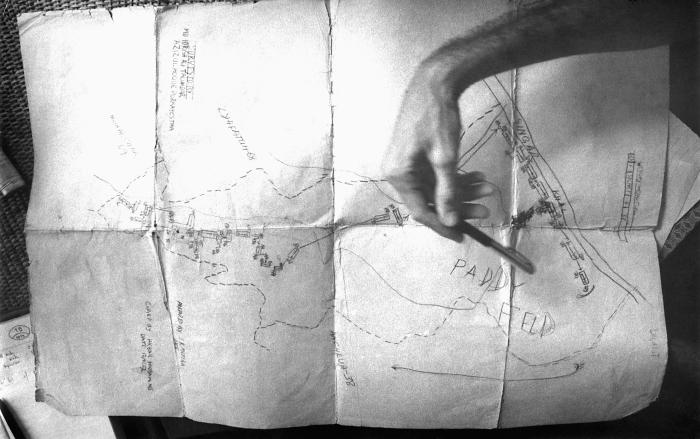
Maps were integral to achieving a successful smallpox eradication campaign outcome, for it enabled public health practitioners, and local volunteers to track smallpox cases once discovered, and inhabitants who'd been in contact with such cases using epidemiologically sound science. There were different types of maps that arose during the process, and this was a 'field map' used to geographically map the terrain for each locale. The keeping of detailed records was extremely important, and is one of the hallmarks of properly practiced epidemiologic science. Smallpox cases that were uncovered had to be followed to a successful outcome, as well as anyone associate with close contact with any confirmed smallpox case.